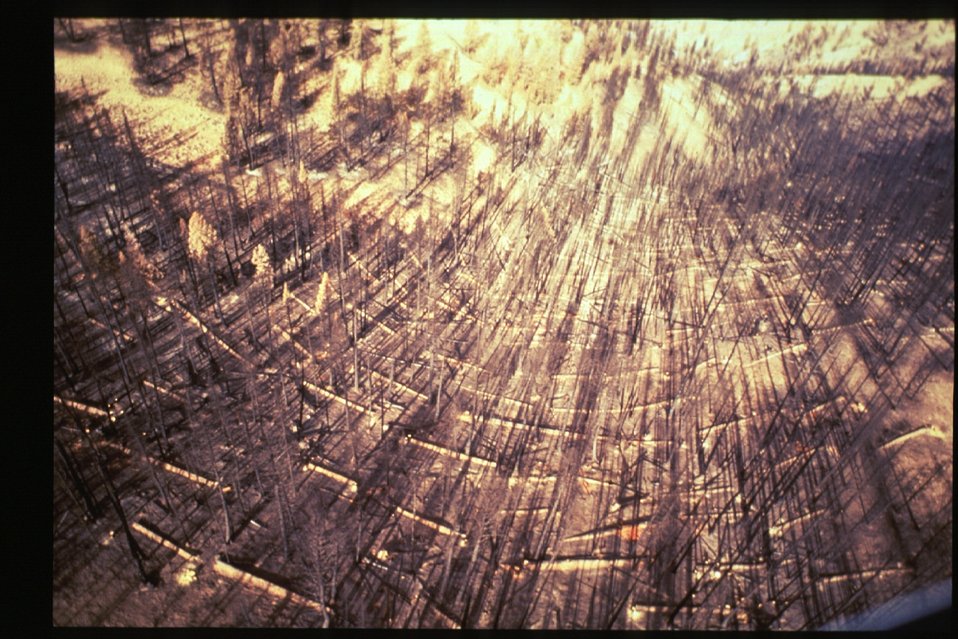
Boise Foothills Fire Danskin Mountains and South Fork of Boise River Burnt area Four River Field Office LSRD Lower Snake River District